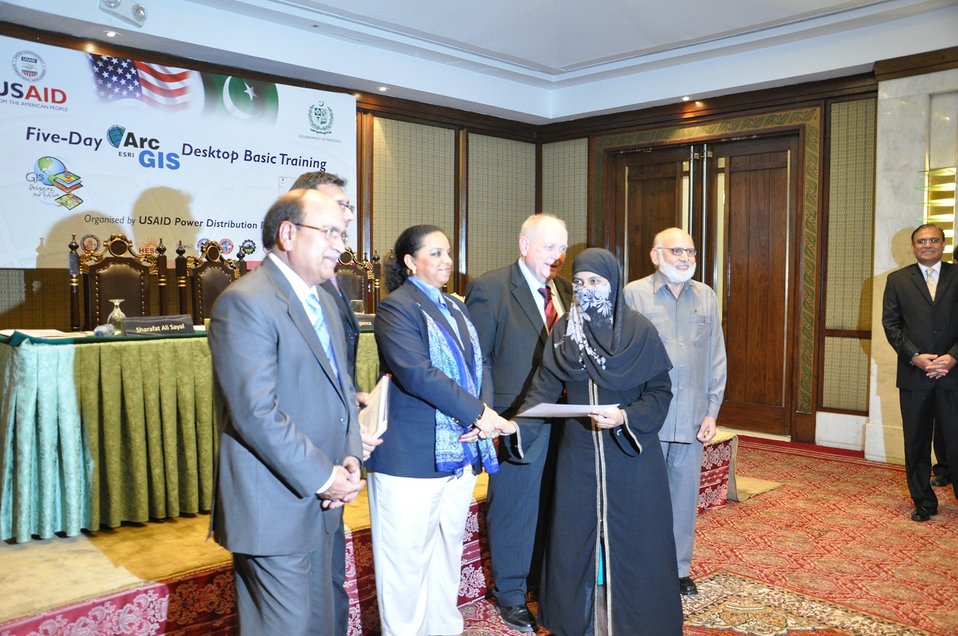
Planning and Engineering Workshop at Lahore

Lahore, July 20, 2012: The United States is strengthening Pakistan’s energy sector and helping to end energy shortages. In this effort, Acting Director USAID Punjab Gail Spence distributed certificates to mangers from nine power sector distribution companies (DISCOs) who completed a U.S.-funded five-day Planning and Engineering training program. The training aims to modernize the Planning and Engineering (P&E) sectors of the DISCOs improving energy distribution across Pakistan. “I am confident that thanks to this training, Pakistan will now be better able to meet its power sector reform targets and reduce the energy crisis,” Ms. Spence remarked.

The USAID Power Distribution Program organized the training in close collaboration with the Lahore Electric Supply Company (LESCO). The four year USAID Power Distribution Program is a testament to the United States’ commitment to supporting Pakistan’s energy sector. Through the Power Distribution Program, USAID is helping DISCOs modernize equipment, receive expert consultations, and introduce international best practices to ensure a more reliable supply of power to consumers.